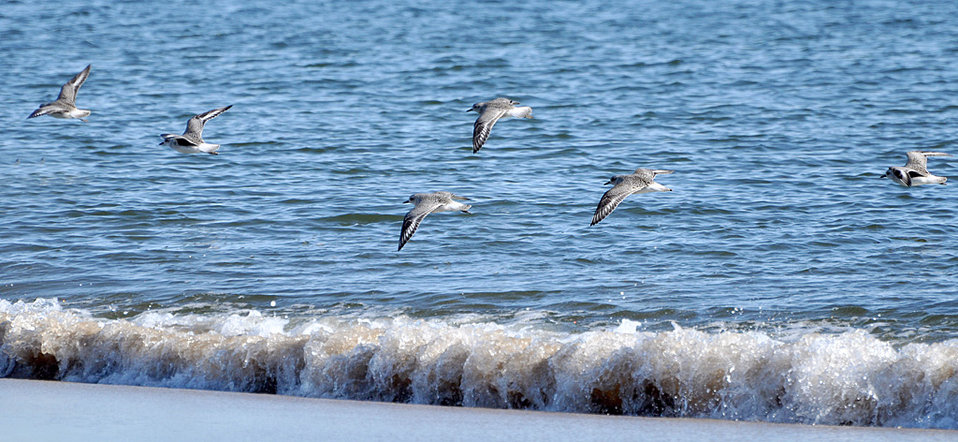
Shorebirds

Parker River National Wildlife Refuge/USFWS